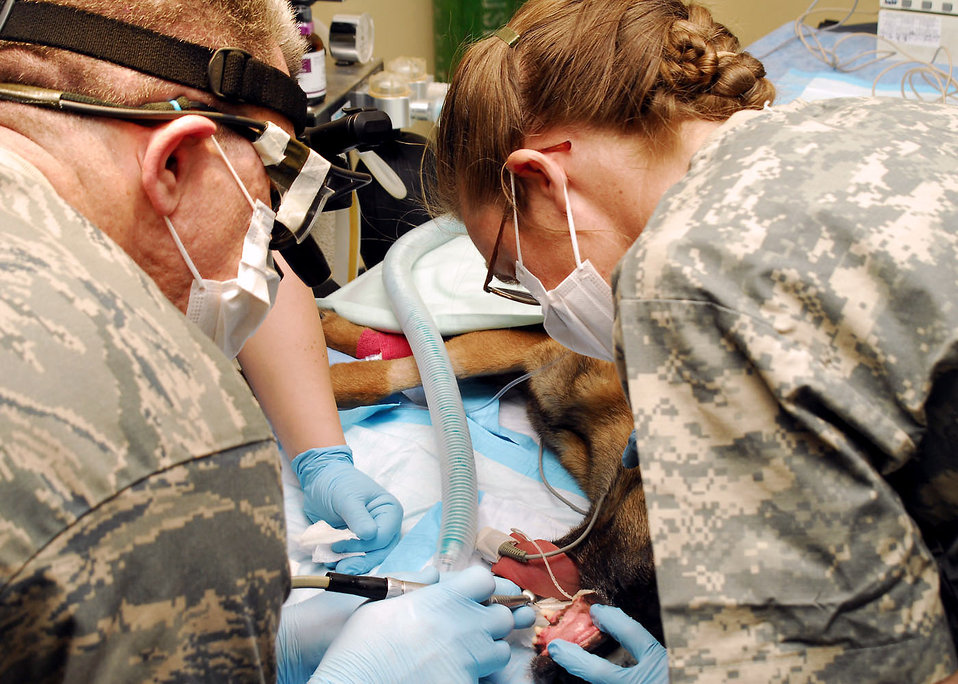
Airmen, Soldiers team up to keep working dog in the fight

Lt. Col. (Dr.) Mark Henderson drills a hole in the tooth of Air Force military working dog Kitti to perform a root canal with the assistance of Army Capt. (Dr.) Elizabeth Williams Jan. 15 at an air base in Southwest Asia. Dr. Henderson is a 386th Expeditionary Medical Group dentist. Captain Williams is a 218th Medical Detachment veterinarian. The 386th EMDG and the 218th staffs had to combine their resources and experience for the dog's operation.